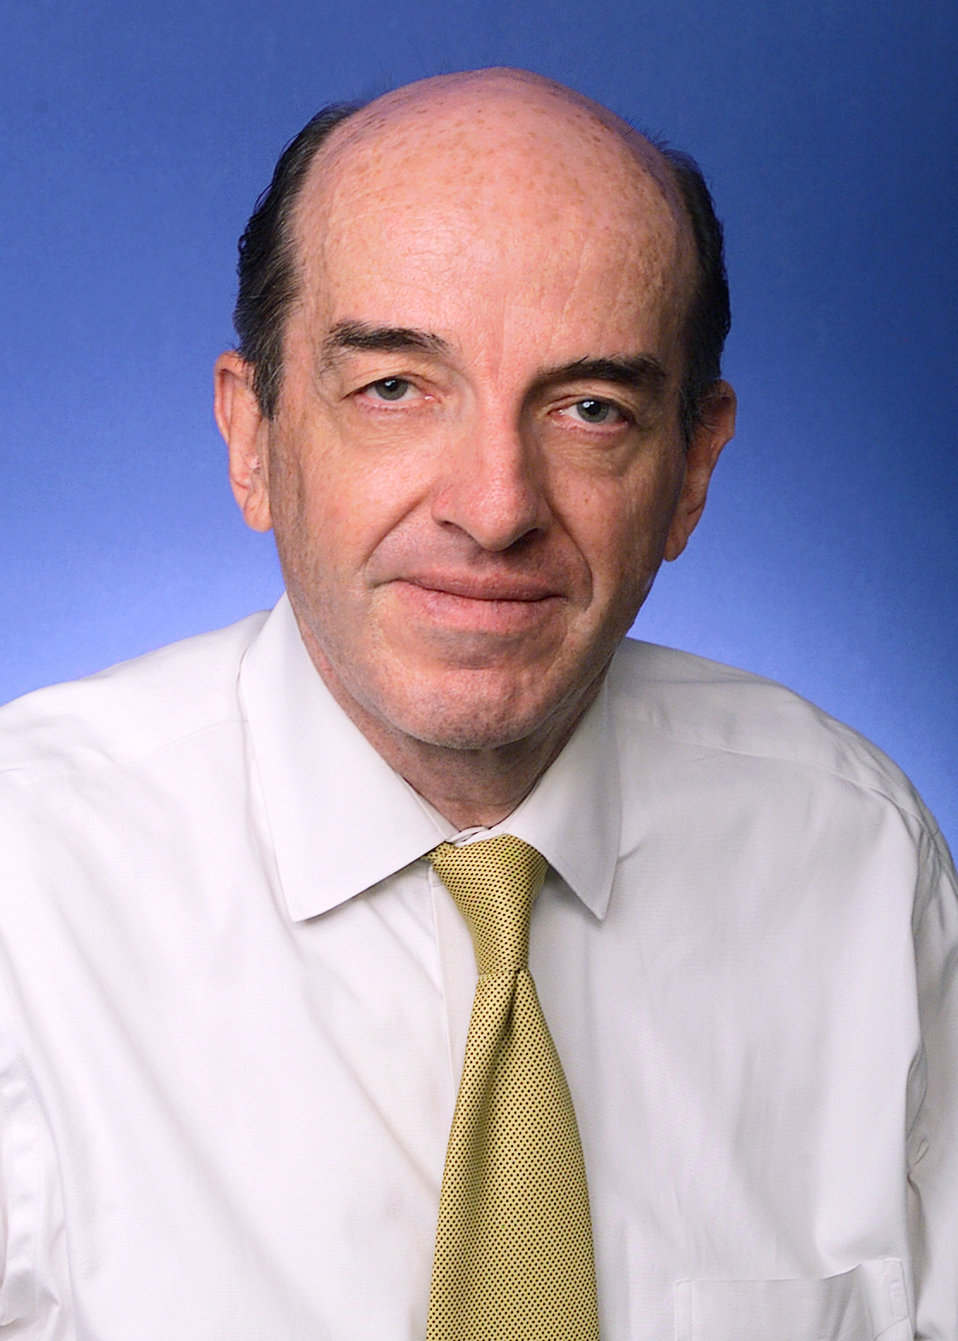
Michael Copps 5